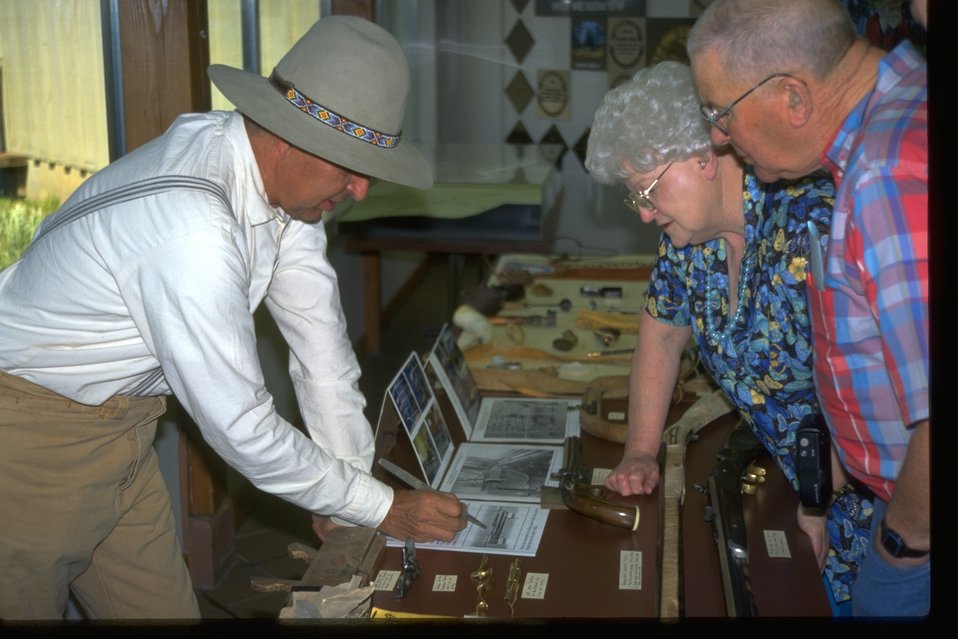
Dick Micha demonstrating gunsmithing to visitors at the NHOTIC.